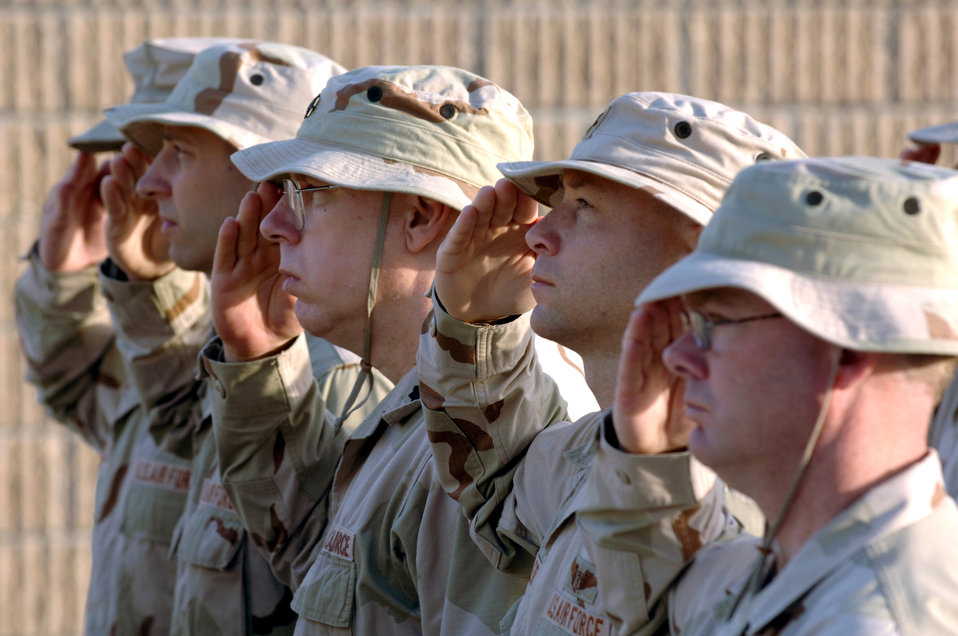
Desert honor guard

Airmen from the 379th Expeditionary Medical Group salute in formation during a retreat ceremony at a deployed location in Southwest Asia Friday, March 24, 2006.